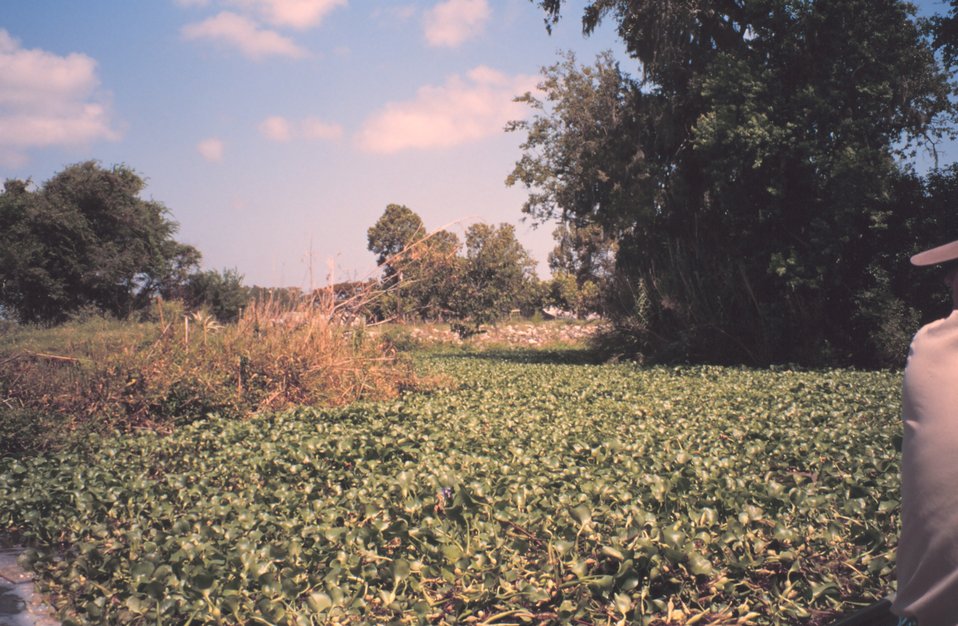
Water hyacinth, an exotic, filling a canal. Water hyacinth stops boat traffic and interferes with circulation of water.